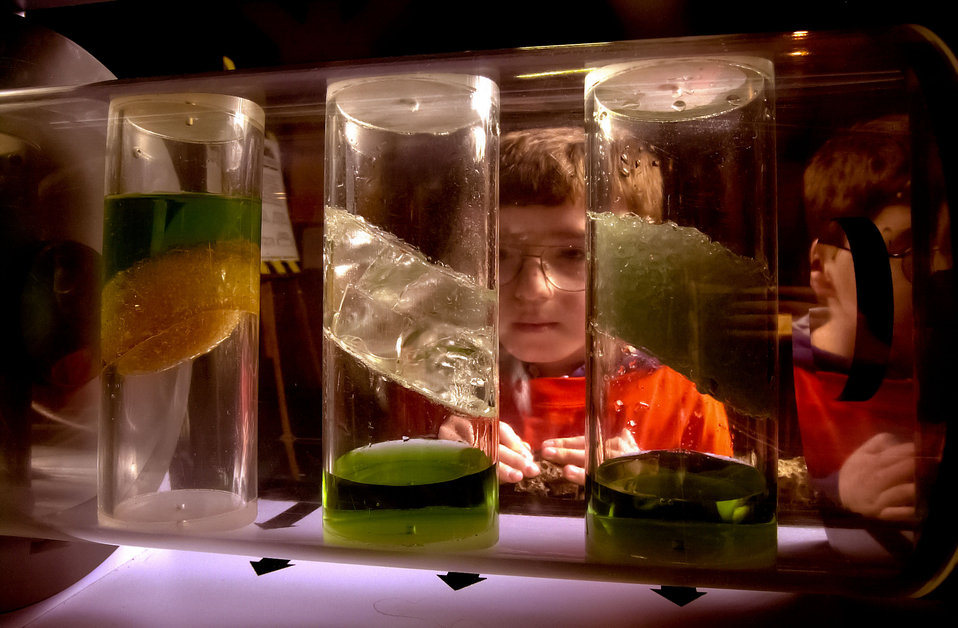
Discover E exhibit at American Museum of Science and Energy Oak Ridge

00-0013-63 DOE photo by Lynn Freeny

Discover E exhibit at American Museum of Science and Energy Oak Ridge Tennessee Feb. 2000